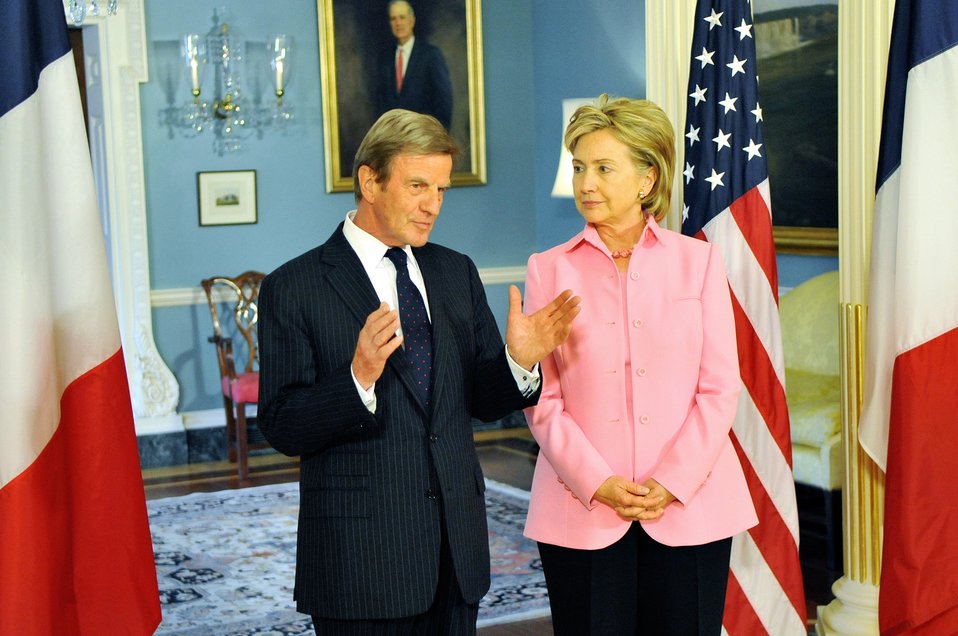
Secretary Clinton Meets With French Foreign Minister

U.S. Secretary of State Hillary Rodham Clinton hosts a bilateral meeting with French Foreign Minister Bernard Kouchner in the Treaty Room of the U.S. Department of State in Washington, DC May 11, 2009.